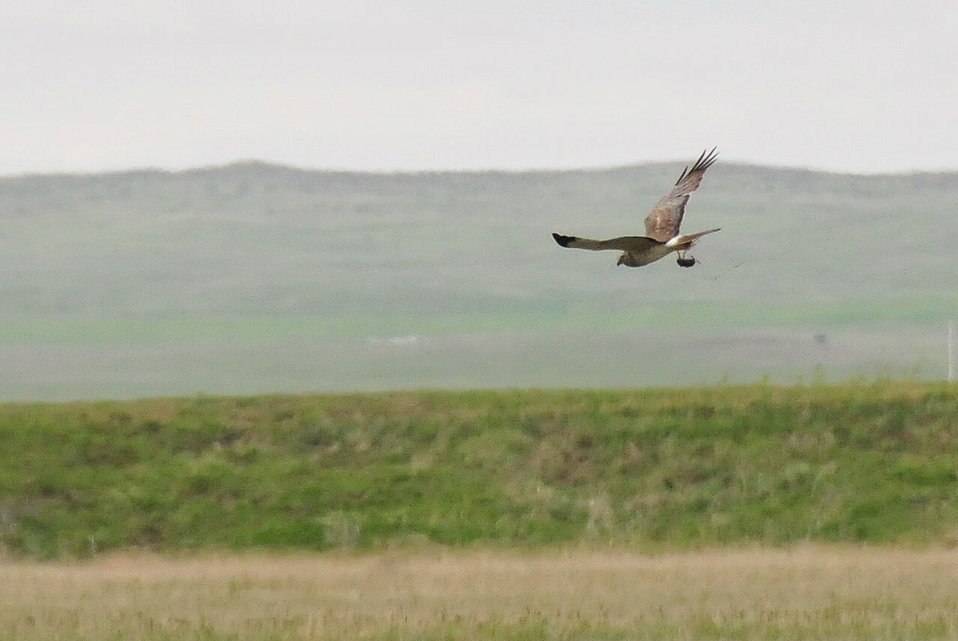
Northern Harrier with Vole Lacreek NWR